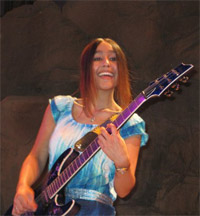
Desireé Bassett, a rock guitarist performing at the Mohegan Sun Casino in Uncasville, Connecticut on 28 December, 2009.